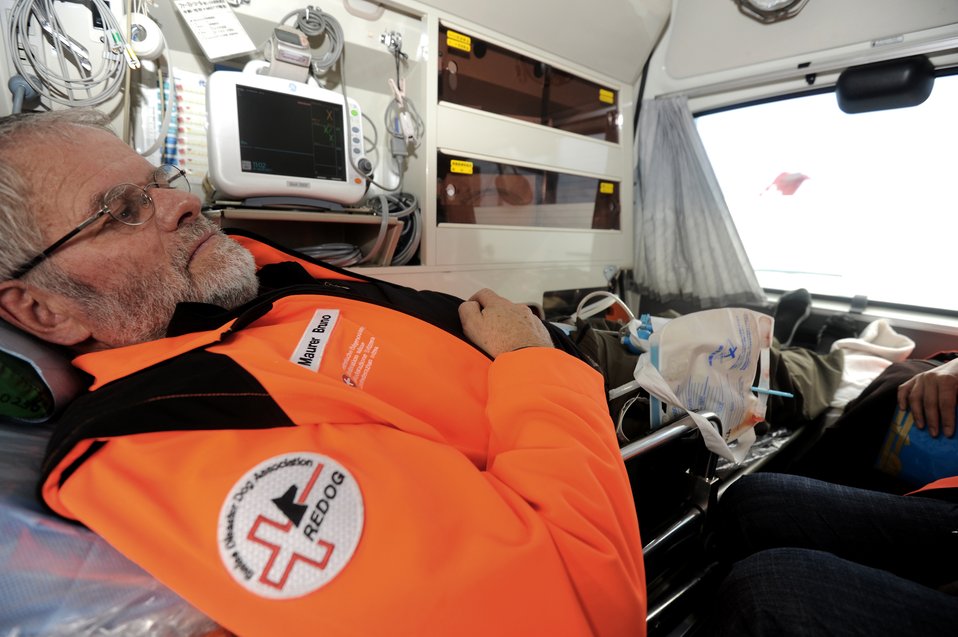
Transporting precious cargo worldwide

MISAWA AIR BASE, Japan -- Maurer Bruno, a Swiss Disaster Dog Association volunteer, waits patiently to board the plane to Switzerland, after his emergency surgery at the Hachinohe Medical Center on Mar. 21. Bruno was helping out for ten days with the recovery efforts in northern Japan prior to his emergency surgery at the Hachinohe Medical Center.